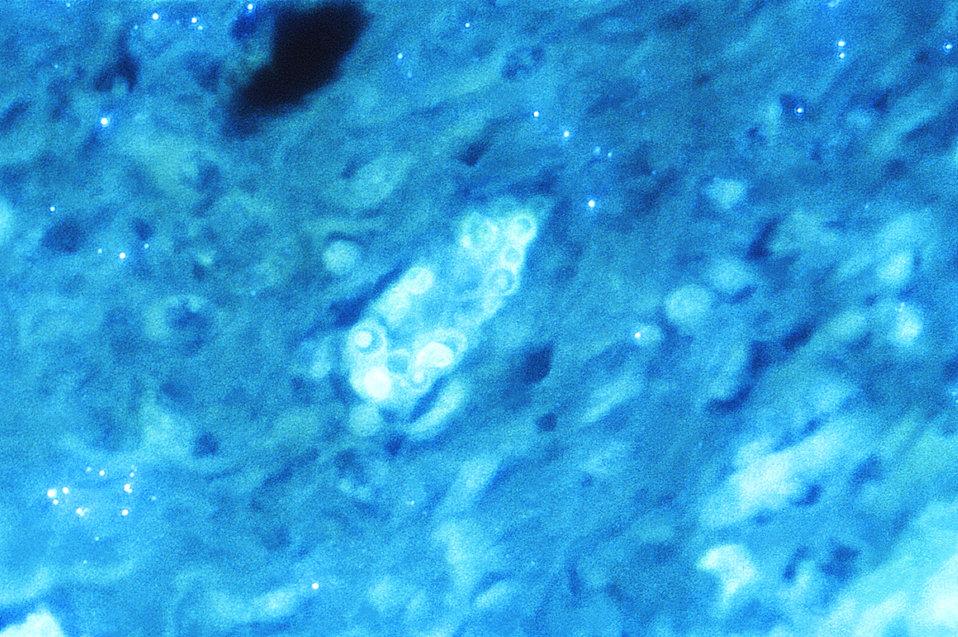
Magnified 562X, this "digested", and fluorescent antibody-stained photomicrograph reveals the presence of Blastomyces dermatitidis antigens in this human lung tissue specimen.